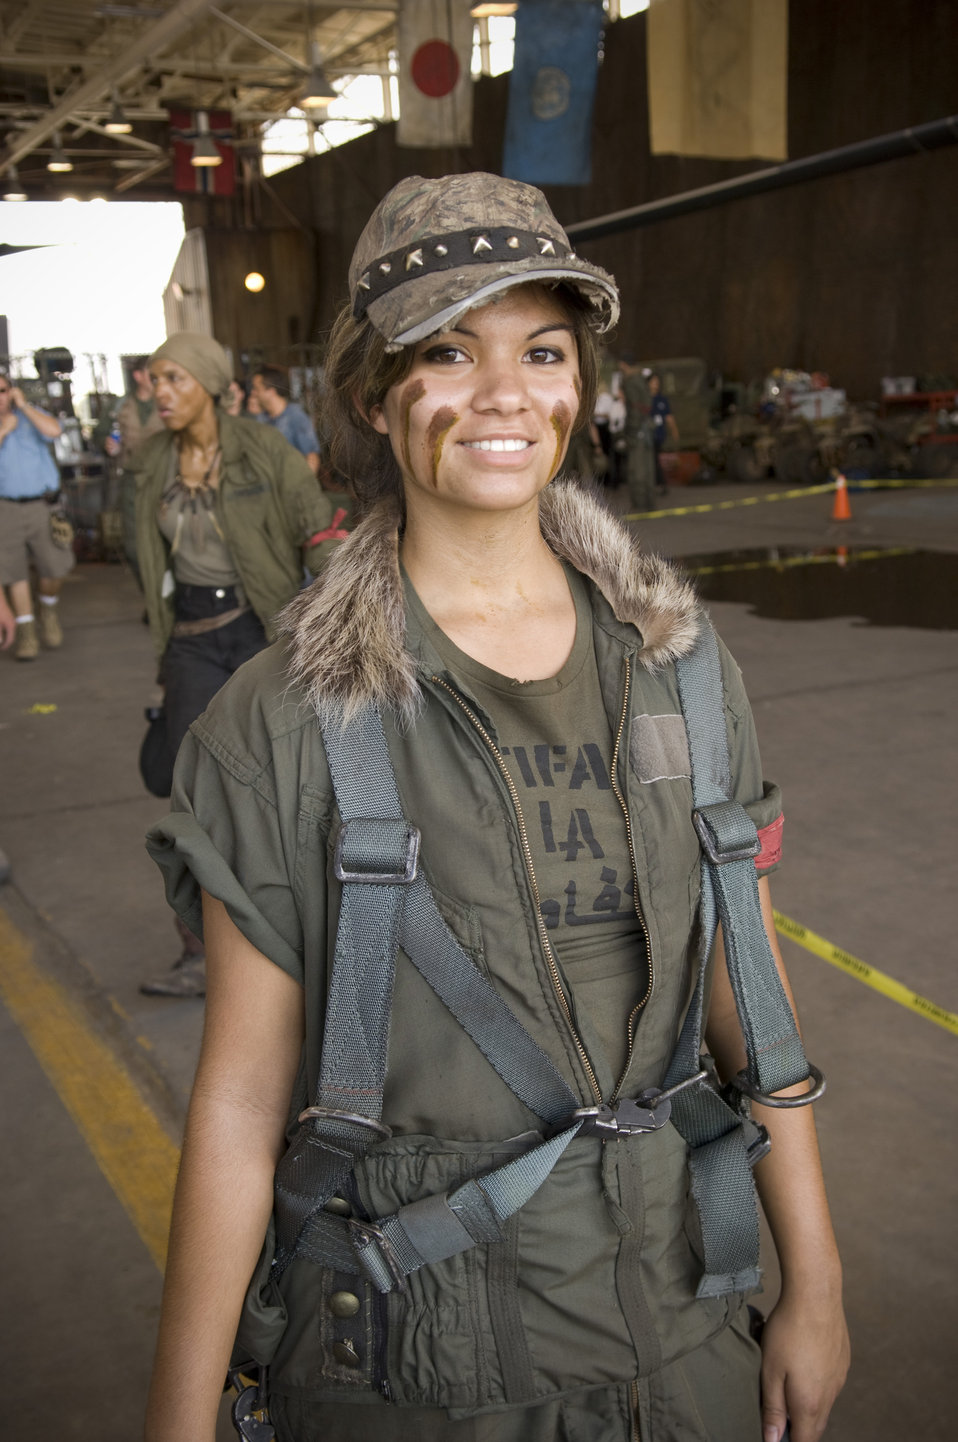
Airmen onboard Terminator Salvation

Airman 1st Class Tiffany Ehlen portrayed a resistance pilot during the production of Terminator Salvation at Kirtland Air Force Base, NM on July 18, 2008. She is assigned to the 377 Mission Support Squadron herre.